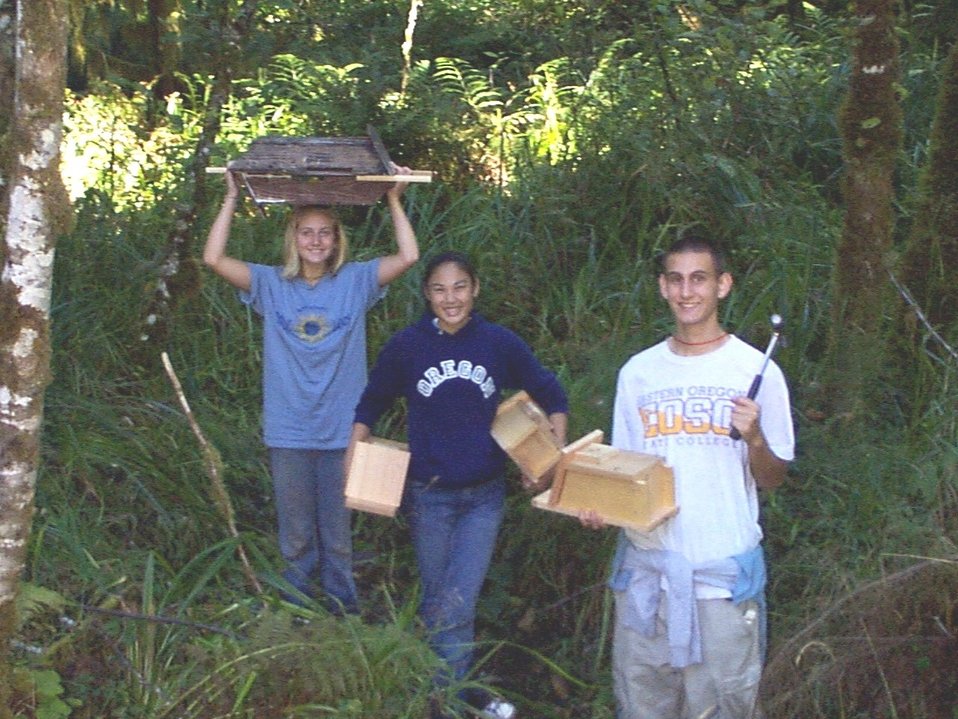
Volunteers install bird boxes along the trail at McGowen Creek.